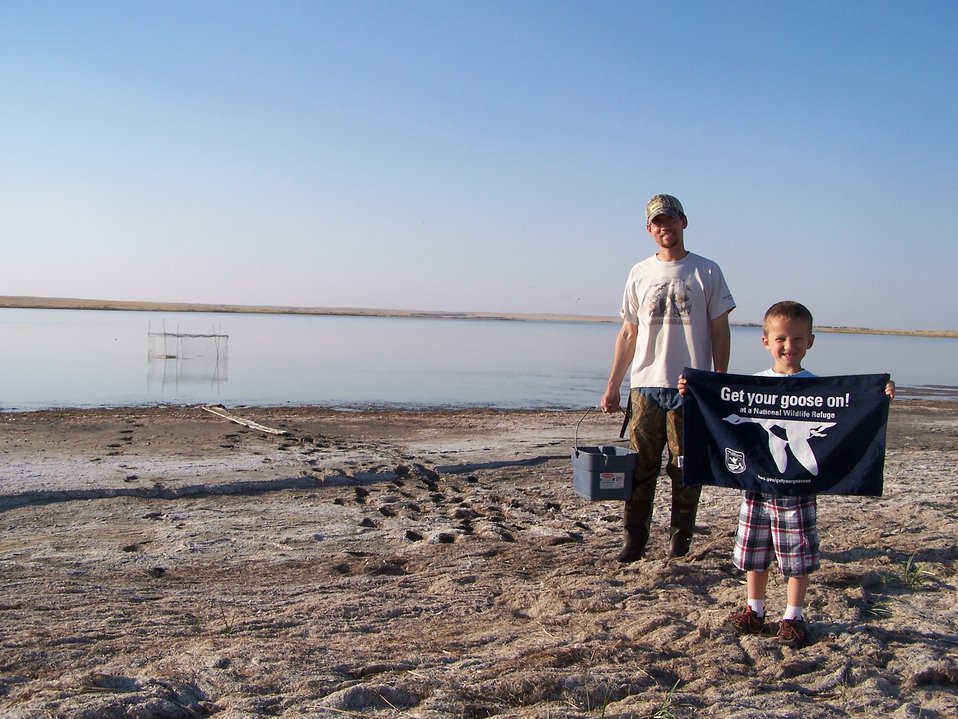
Get Your Goose On! - While Trapping Ducks

Assistant Manager, Todd Boonstra, and son, Jack, Get Their Goose On while baiting for duck trapping at Bowdoin NWR.